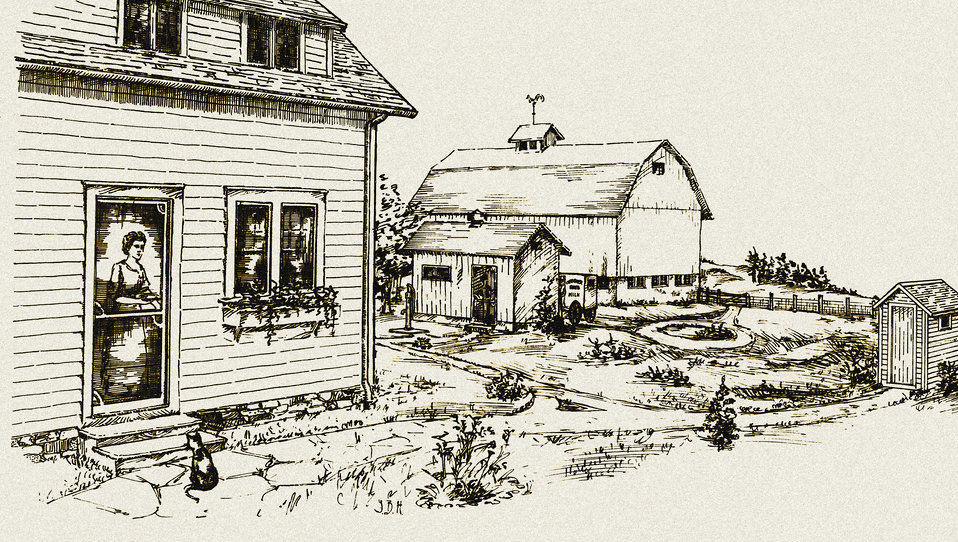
This historic diagram, which had been digitally enhanced and colorized, depicted a sanitary privy located within a generally sound sanitary environment. The house was equipped with screens on the windows in order to prevent the entry of flying insects; the privy was sited lower than the potable water source represented by the pump in the center of the drawing; no farm animals were evident throughout the farm family's living spaces. Even the pet cat was kept outdoors, and could be seen sitting on the stone walkway, which itself minimizes the amount of dirt that could be carried into the house.